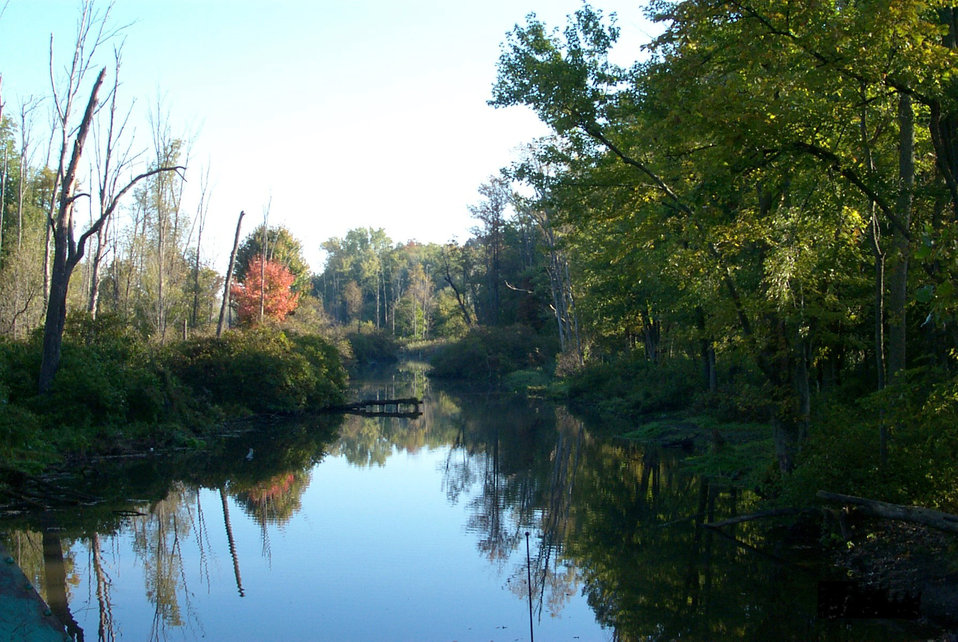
Oak Orchard Creek at Iroquois National Wildlife Refuge in New York provides a primitive route for canoes and kayaks.